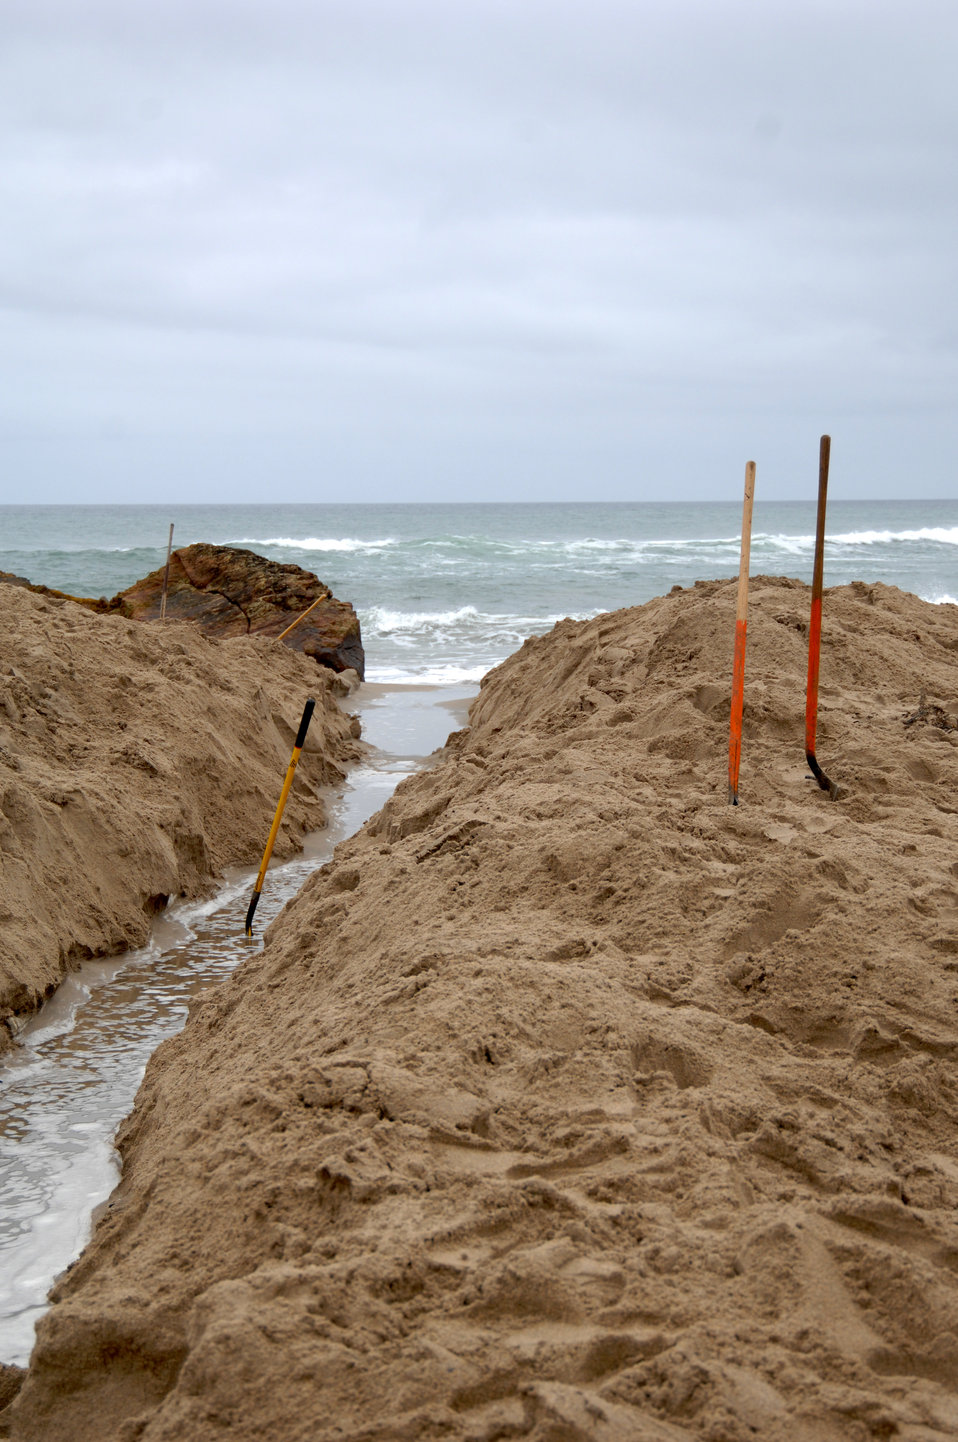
Pescadero Breach 14